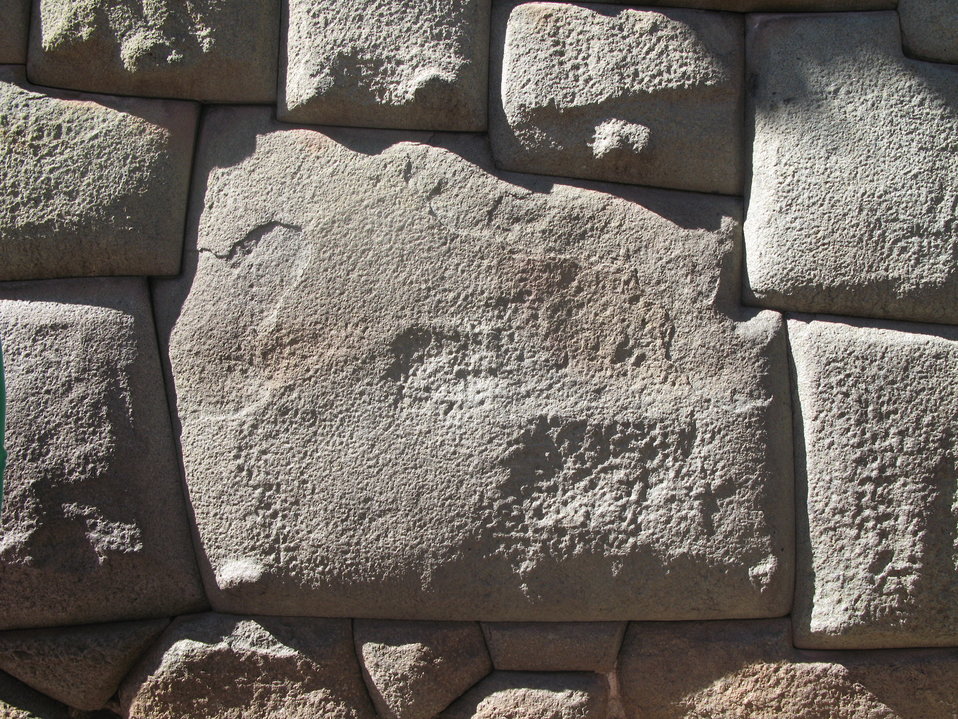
Slovenščina: V soseski Barrio de San Blas se vidi 'Kamen dvanajstih kotov'